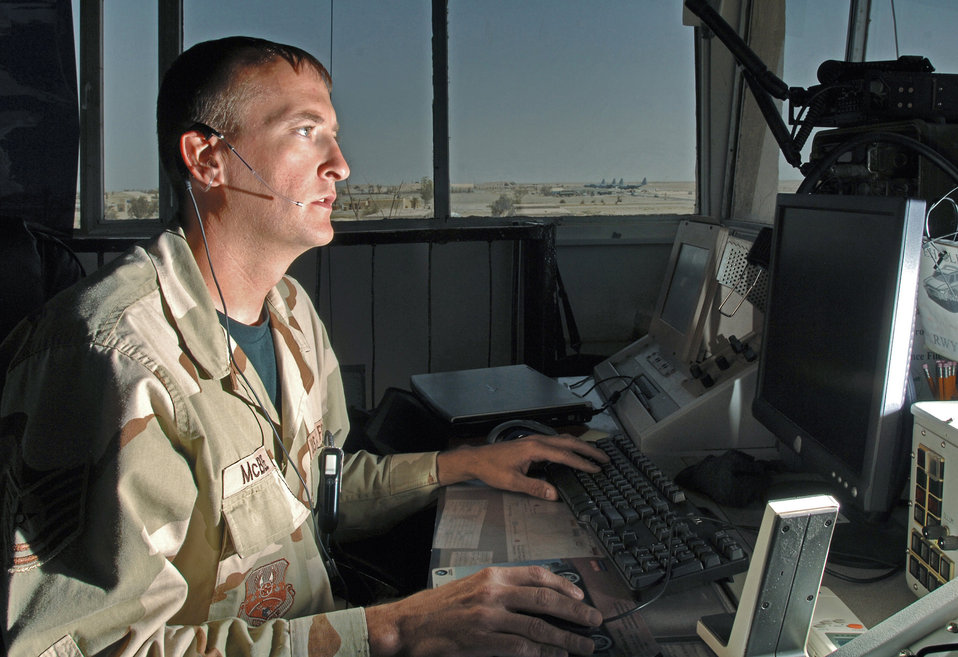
Air traffic controllers perform dual mission, put fighters on target

ALI BASE, Iraq -- Tech. Sgt. Chad McBee checks local weather to relay to a pilot. Sergeant McBee is a tower controller with the 407th Expeditionary Operations Support Squadron and is deployed from Pope Air Force Base, N.C.